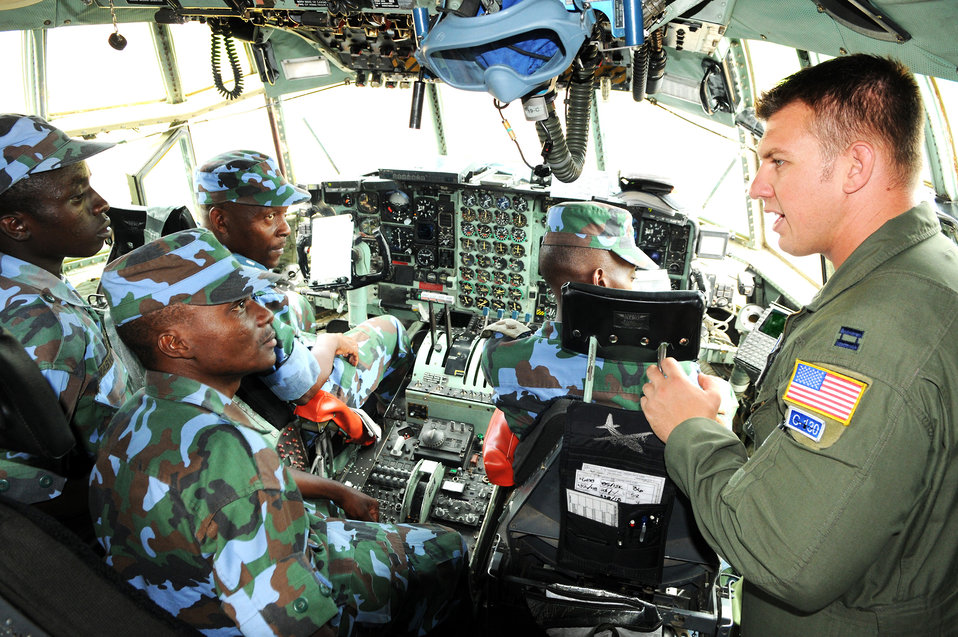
Air Forces Africa Airmen share airdrop expertise with Ugandan forces

Capt. Kevin Graham gives a tour of the C-130 Hercules flight deck to members of the Ugandan peoples defense force during a theater security engagement event Aug. 26, 2009, at Entebbe Air Base, Uganda.